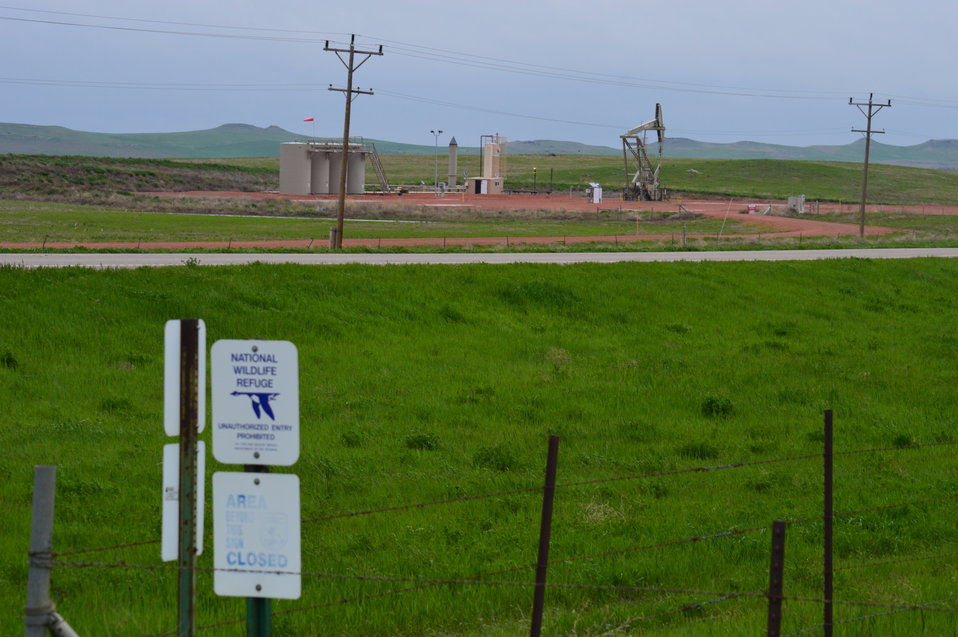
Oil development right across from the entrance to Lake Ilo National Wildlife Refuge